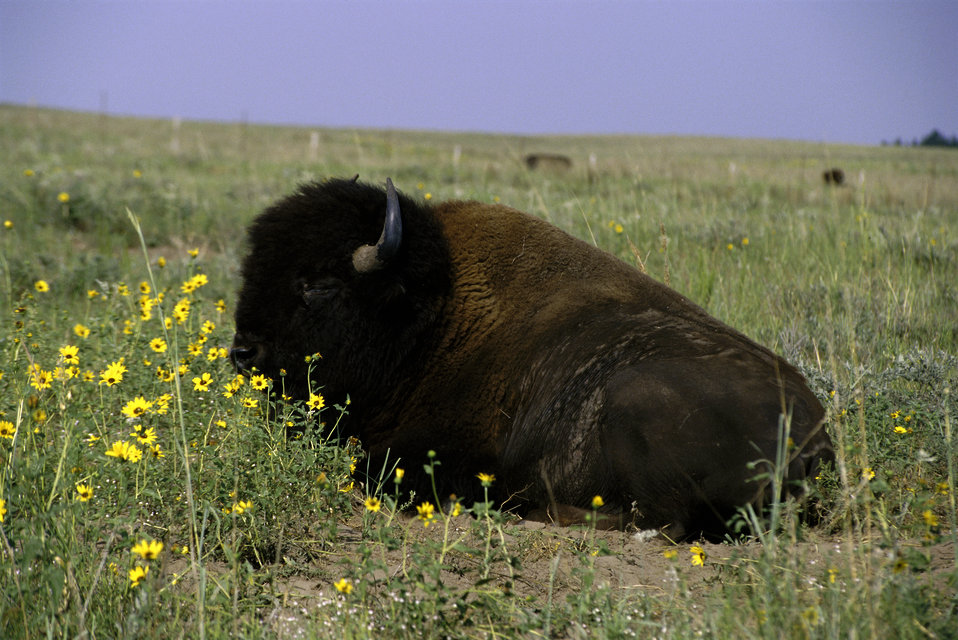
Bison eating grass in a field.

A buffalo eating grass at Fort Niobrara National Wildlife Refuge. Resource links:http://www.fws.gov/fortniobrara/